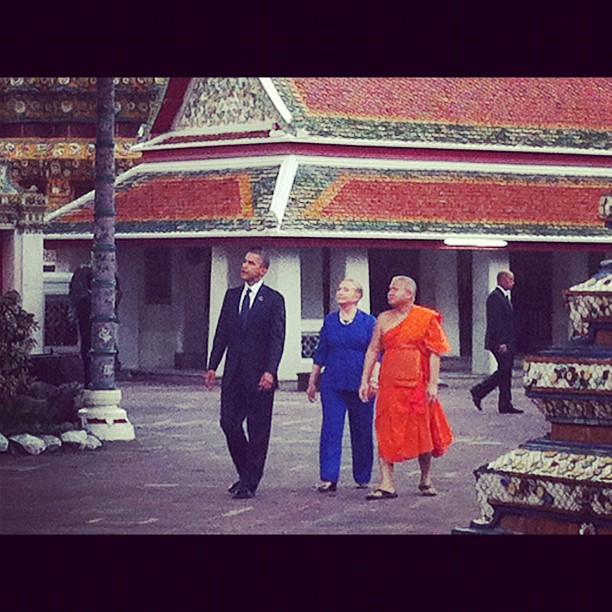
President Obama and Secretary Clinton Tour the Wat Pho Royal Monastery With Chaokun Suthee Thammanuwat

U.S. President Barack Obama, left, and U.S. Secretary of State Hillary Rodham Clinton, center, tour the Wat Pho Royal Monastery with Chaokun Suthee Thammanuwat, Dean, Faculty of Buddhism Assistant to the Abbot of Wat Phra Chetuphon, in Bangkok, Thailand, November 18, 2012.